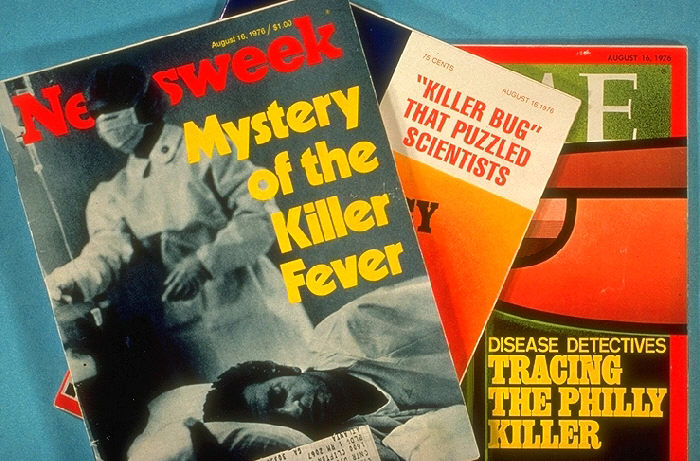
Magazine cover story titles related to outbreak of Legionnaires's disease.